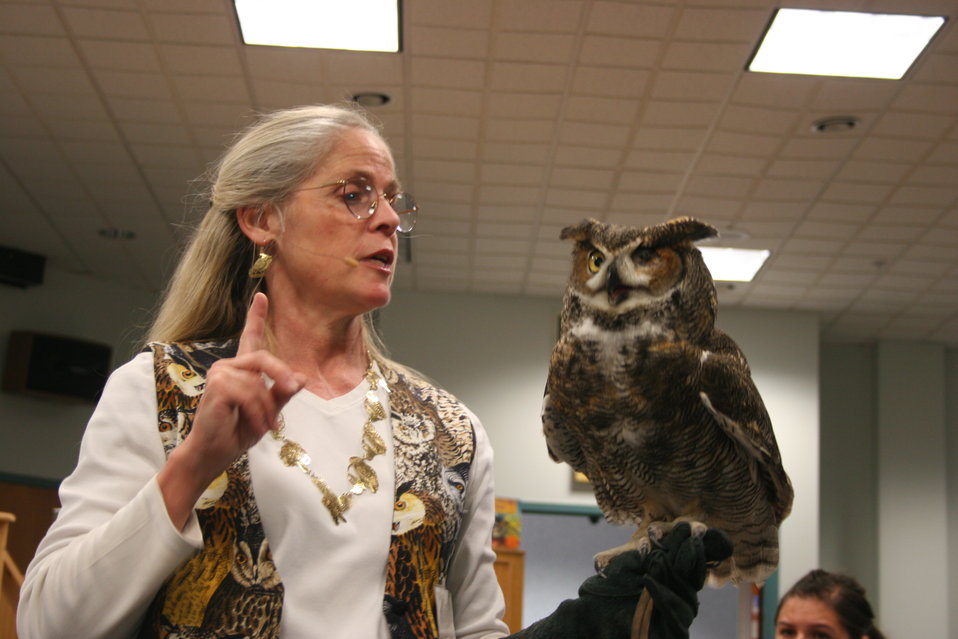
Great Horned Owl

Live bird demonstration